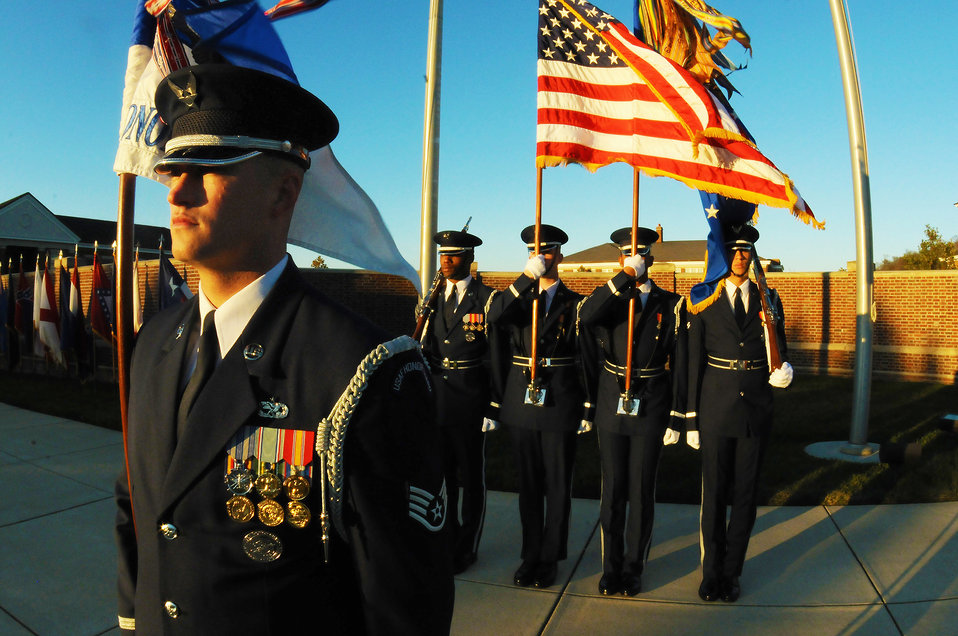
Colors: Out in front

A color guard element trains on the Air Force Honor Guard ceremonial lawn Dec. 17, 2009, at Bolling Air Force Base, D.C.